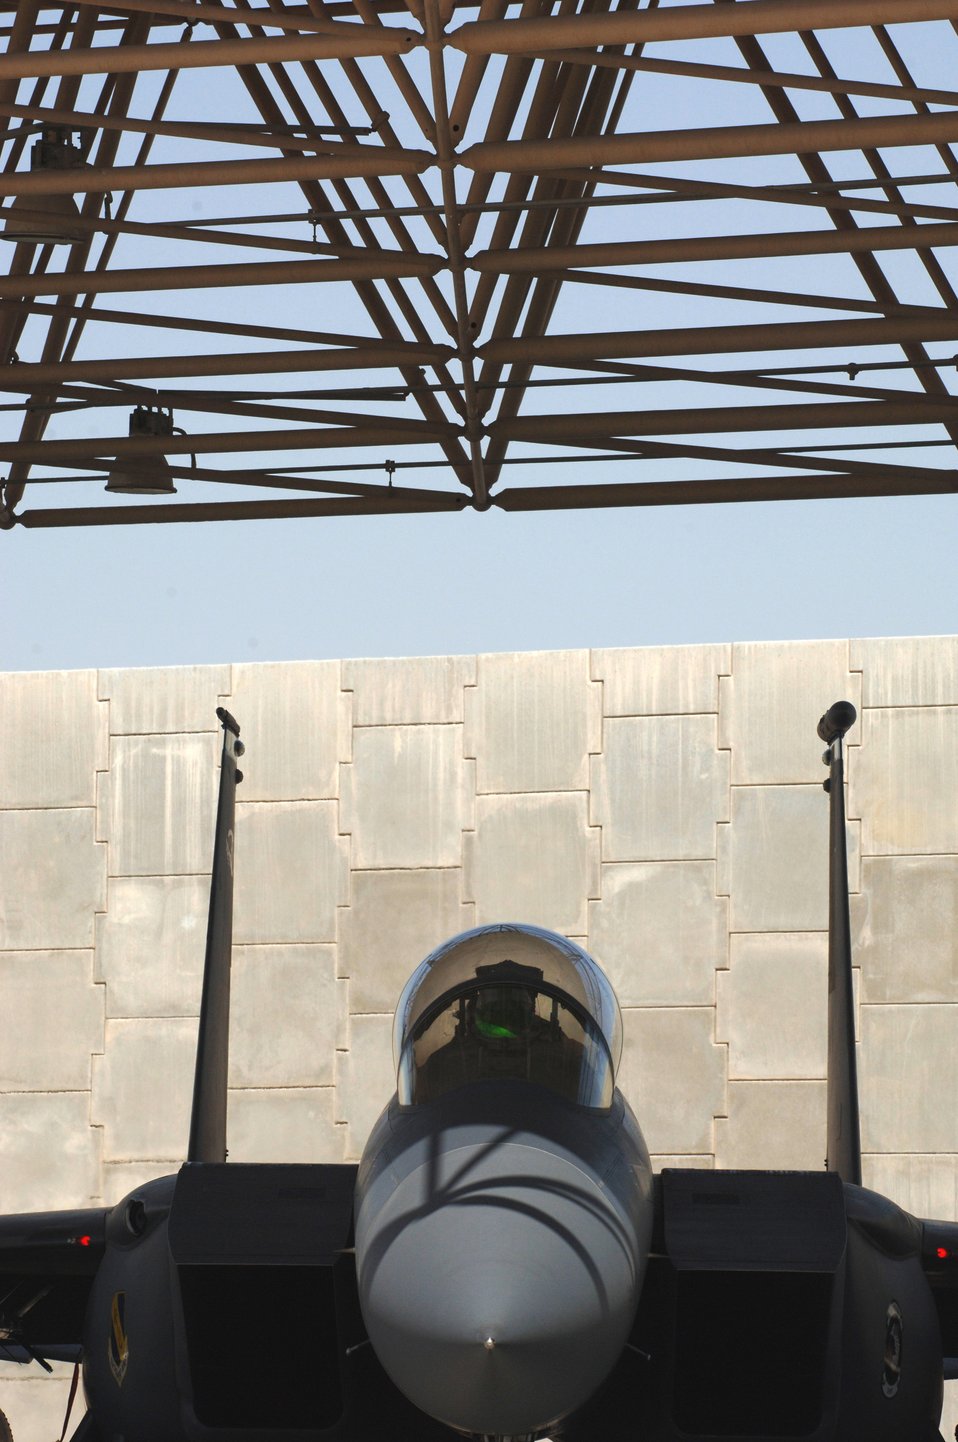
Strike Eagles ready to strike

An F-15E Strike Eagle from the 336th Expeditionary Fighter Squadron prepares for takeoff Wednesday, March 8, 2006, at a deployed location in Southwest Asia. The 336th is home-based at Seymour Johnson Air Force Base, N.C.